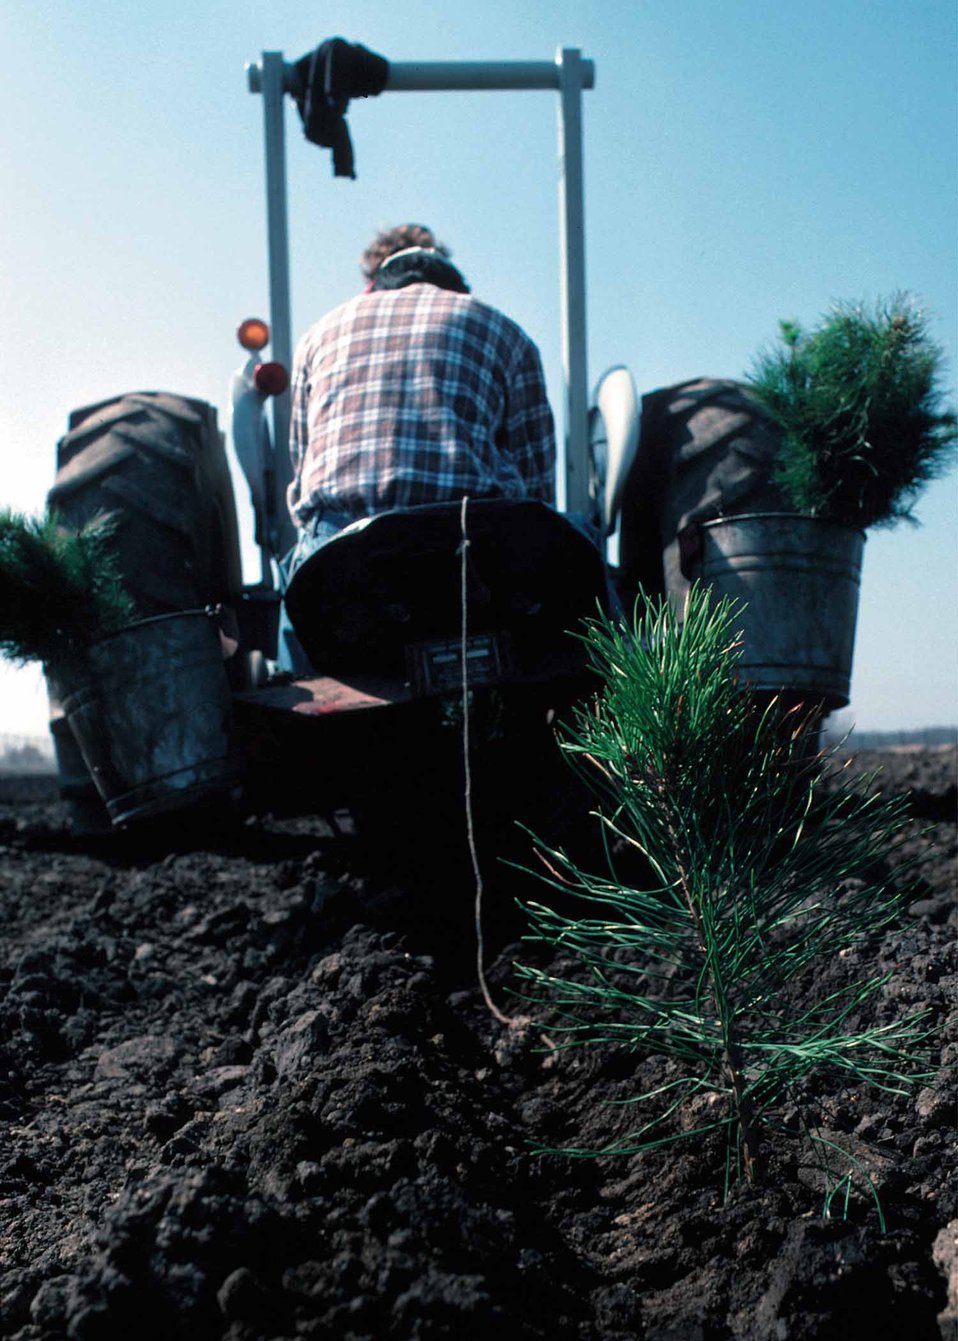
Field windbreaks in the Northern Plains.